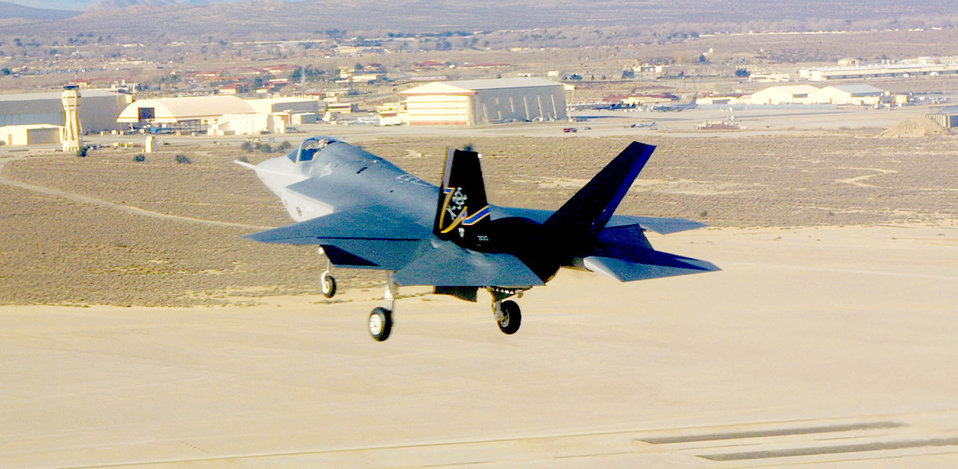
X-35C Joint Strike Fighter

PALMDALE, Calif. -- Lockheed martin's X-35C Joint Strike Fighter concept demonstrator crosses a dry lakebed on its way to Edwards Air Force Base, Calif. The X-35C will undergo testing at Edwards for more than a month before moving on to Naval Air Station Paxtuxent River, Md.